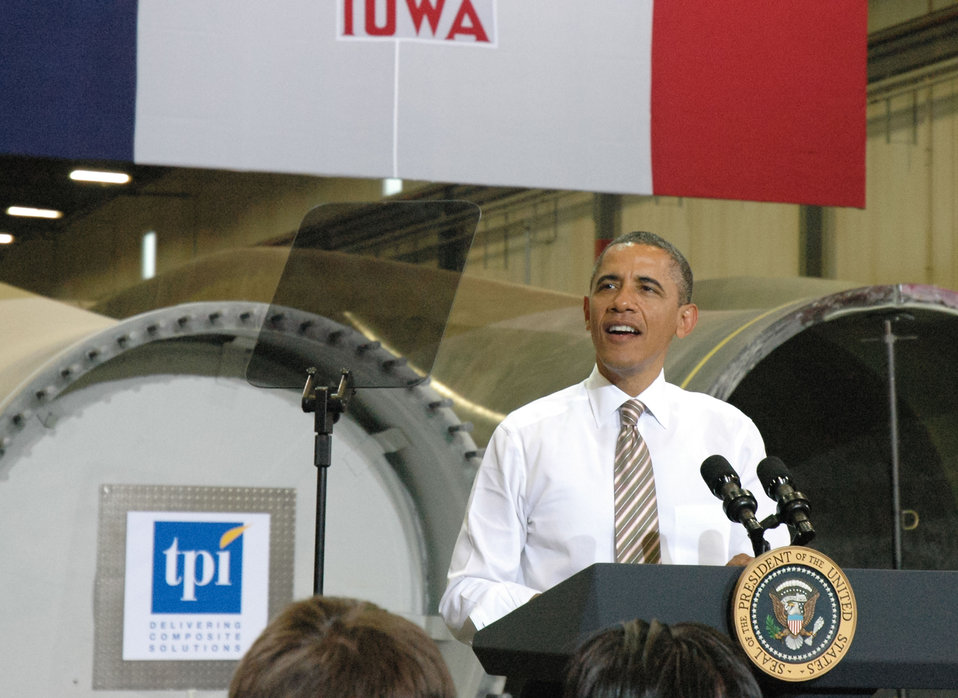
President Barack Obama speaks to a crowd of about 500 people at TPI, a maker of wind turbine blades that employs 700 people at its Newton, Iowa plant on Thursday, May 24, 2012.